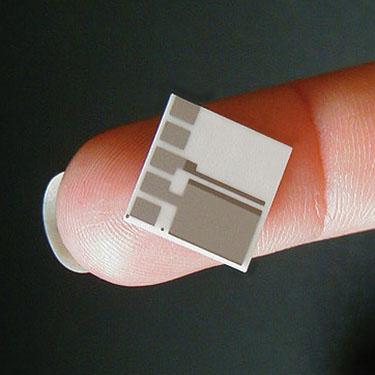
ARGONNE NATIONAL LABORATORY SCIENTISTS DEVELOPED LABORATORIES-ON-A-CHIP THAT CAN DETECT CHEMICALS, BACTERIA OR VIRUSES.

ANL IS CHANGING PRESENT TECHNOLOGY TO MEET HOMELAND SECURITY CHALLENGES. THE RESULTS HAVE LED TO DEVELOPMENT OF A NEUTRON DETECTOR, WHICH IS AN EARLY WARNING AND CRISIS MANAGEMENT COMPUTER SIMULATOR FOR DETECTING BIOLOGICAL AND CHEMICAL AGENTS FOR MASS TRANSIT AND SENSORS FOR BIOLOGICAL AND CHEMICAL AGENTS.